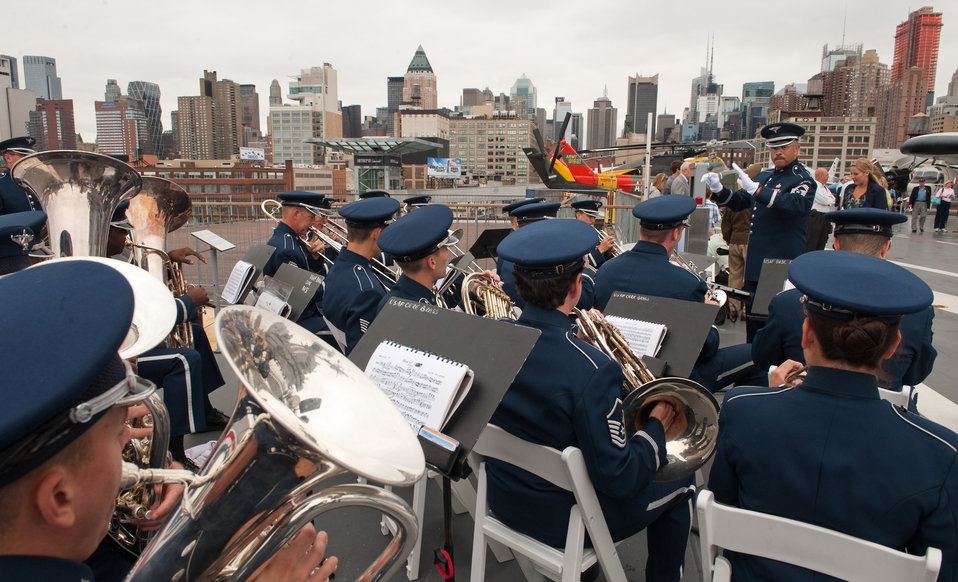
Air Force Week New York City Proclamation Ceremony

The Air Force Band performed during the Air Force Week New York City proclamation ceremony at the USS Intrepid on Aug. 24, 2010. The event at the Intrepid Sea, Air & Space Museum was highlighted by a six-ship flyover by the USAF Thunderbirds. The Honorable Michael Donley, Secretary of the Air Force attended, along with General Raymond Johns, Commander of Air Mobility Command. The Police Commissioner of the City of New York, the Honorable Raymond Kelly, represented NYC. Mr. Greg Kelly of